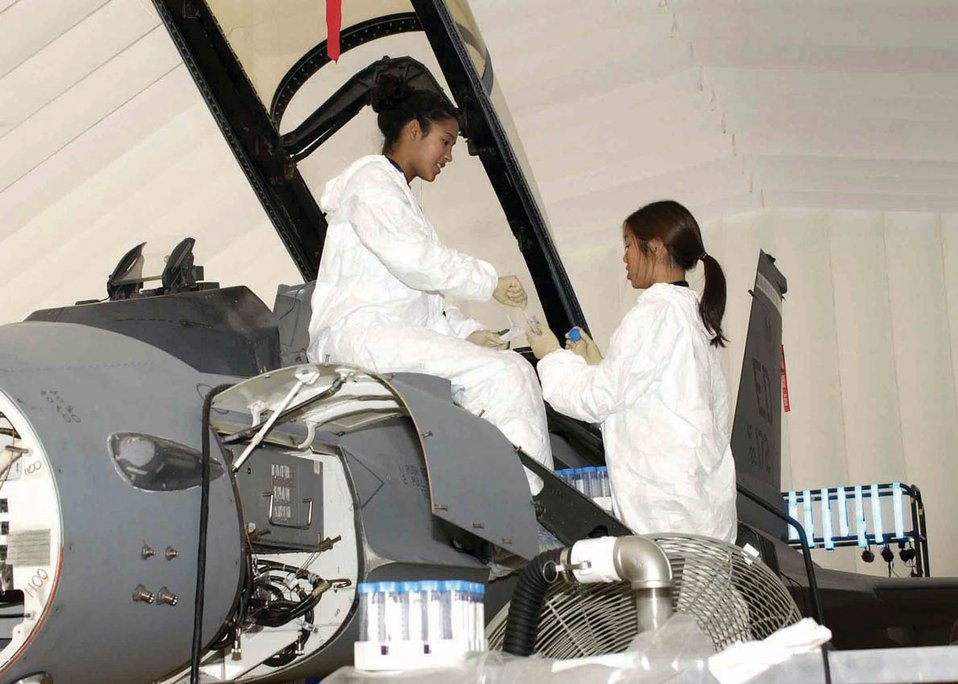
Decon test

EDWARDS AIR FORCE BASE, Calif. (AFPN) -- Tina Slade and Jennifer Tanyatanaboon, prepare an F-16 Fighting Falcon for a biological contamination trial. They are microbiologists with Battelle, the lead contractor for the Joint Strike Force decontamination project.